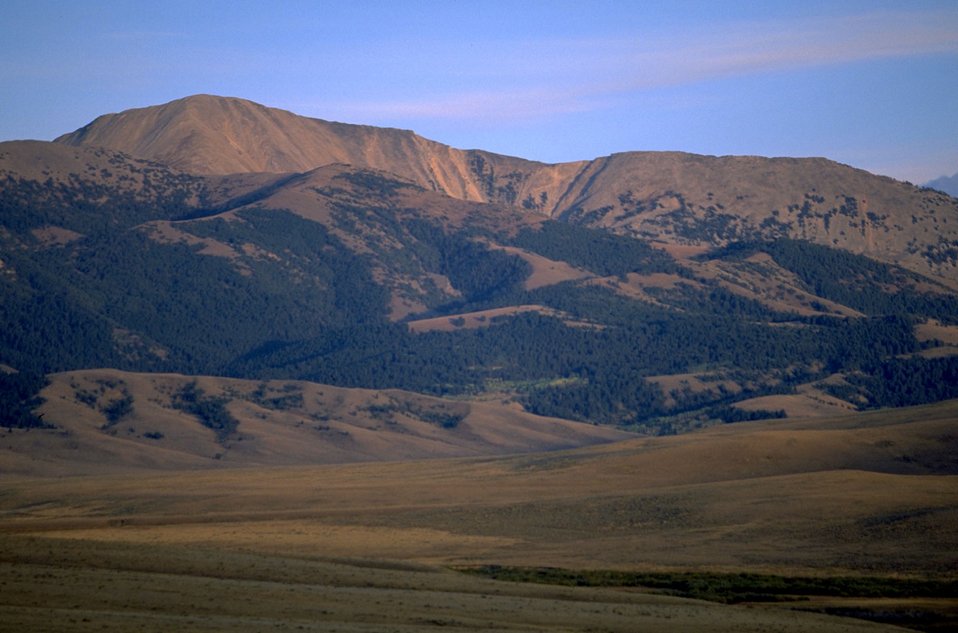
Mountains above East Fork Blacktail Creek campground